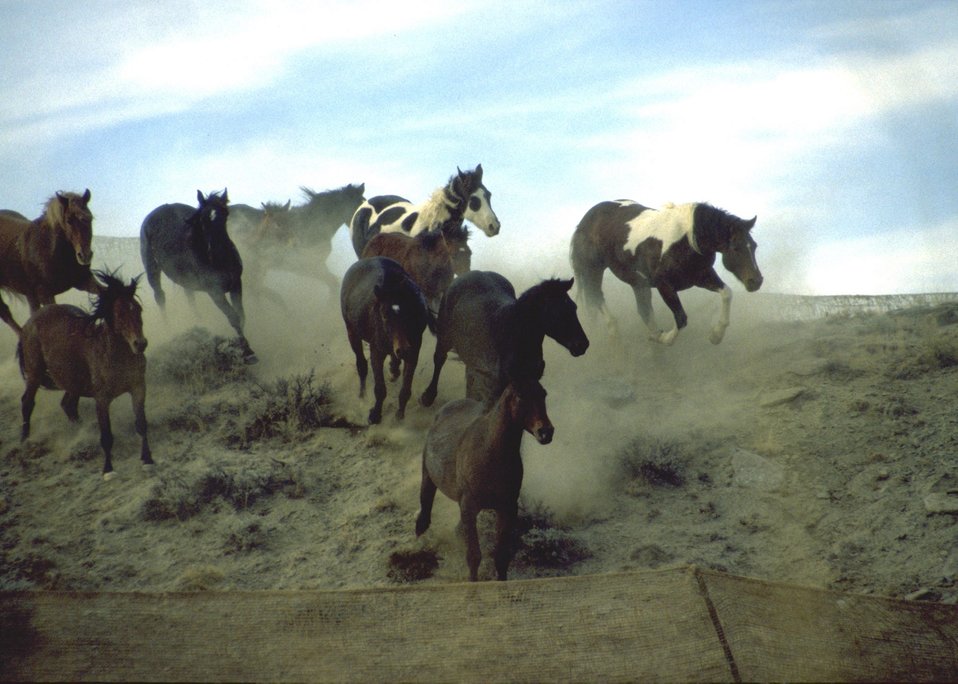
Wild horses.